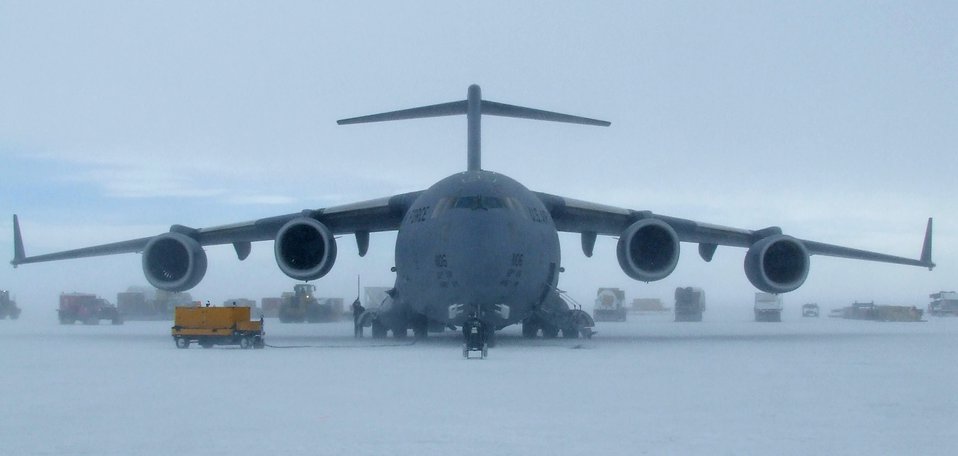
Icy ops

Vehicles transport equipment and supplies off a C-17 Globemaster III from McChord Air Force Base, Wash., Nov. 16, which landed on the sea ice runway near McMurdo Station, Antarctica.